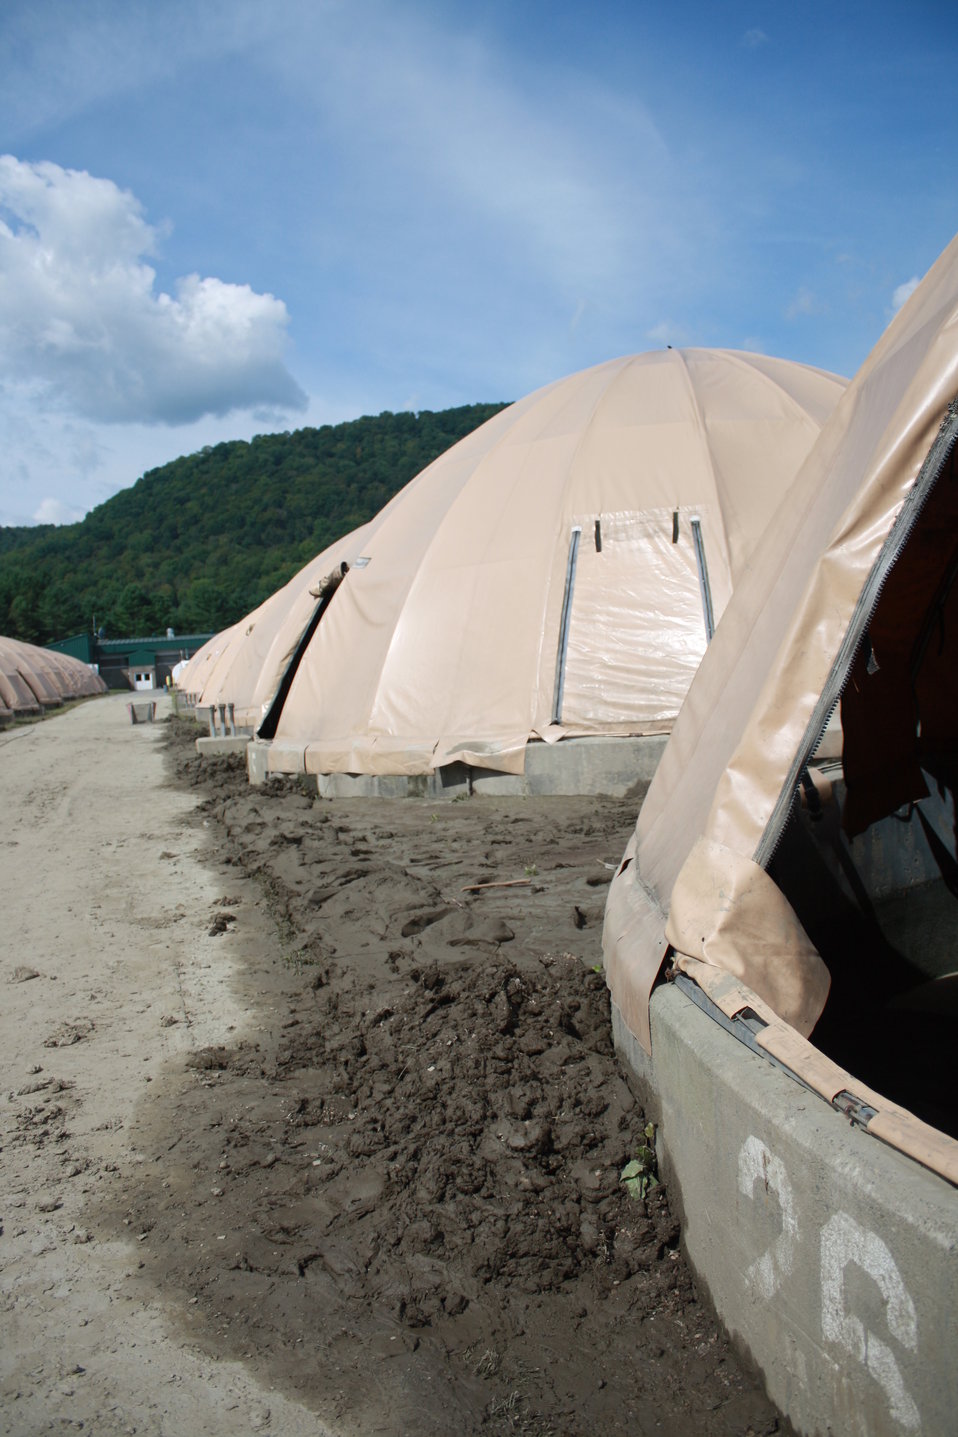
River sediment deposited on White River National Fish Hatchery grounds

Significant amounts of river sediment were deposited on White River National Fish Hatchery grounds during the Hurricane Irene flood event. Here, river sediment has been plowed to clear road between circular fish rearing pools.